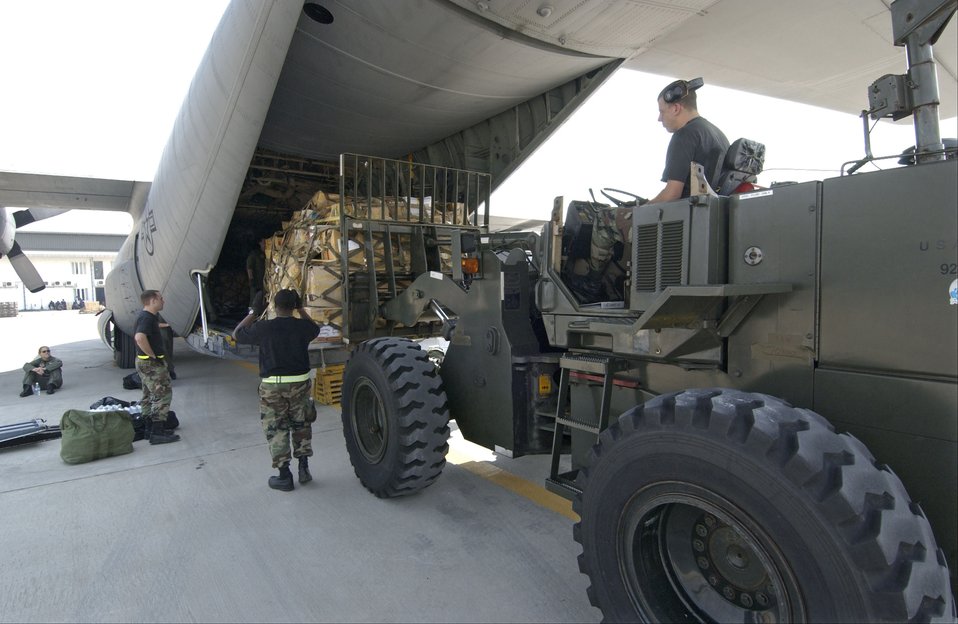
AMC aircraft, people support tsunami-relief operations

BANGKOK, Thailand -- Airmen from the 733rd Air Mobility Squadron at Kadena Air Base, Japan, load a pallet of relief supplies onto a C-130 Hercules at the international airport here Jan. 4.